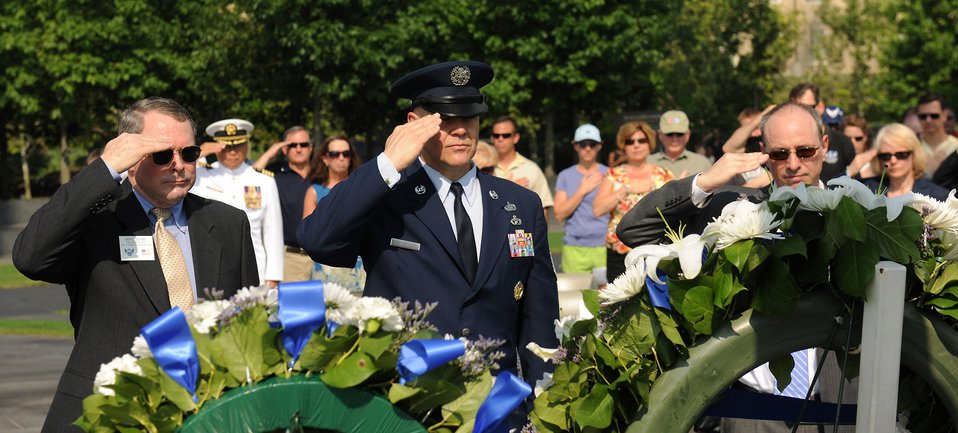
CMSAF Reads Honors Fallen on Memorial Day

Mike Dunn (from left), president and chief executive officer of the Air Force Association and the Air Force Memorial Foundation; Chief Master Sgt. of the Air Force James Roy; and Dan Derrow, deputy chief executive officer of the Air Force Sergeants' Association, salute during a Memorial Day ceremony May 30, 2011, honoring those who gave their lives in service in the last year. The ceremony was at the Air Force Memorial in Arlington, Va. During the ceremony, Chief Roy read the names of each of the Airmen who died in combat in the past year.